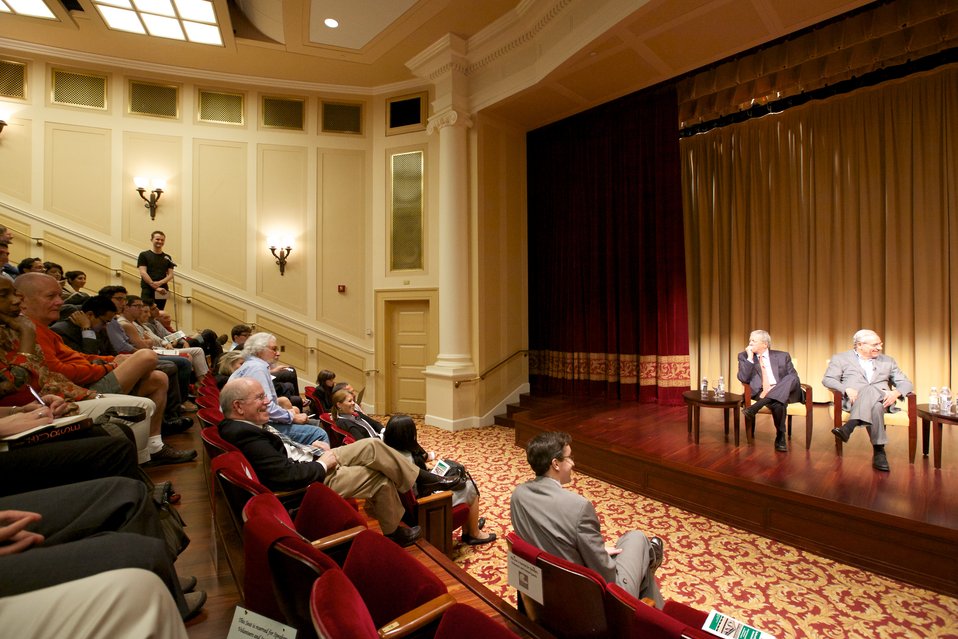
The Role of Congress in International Crises